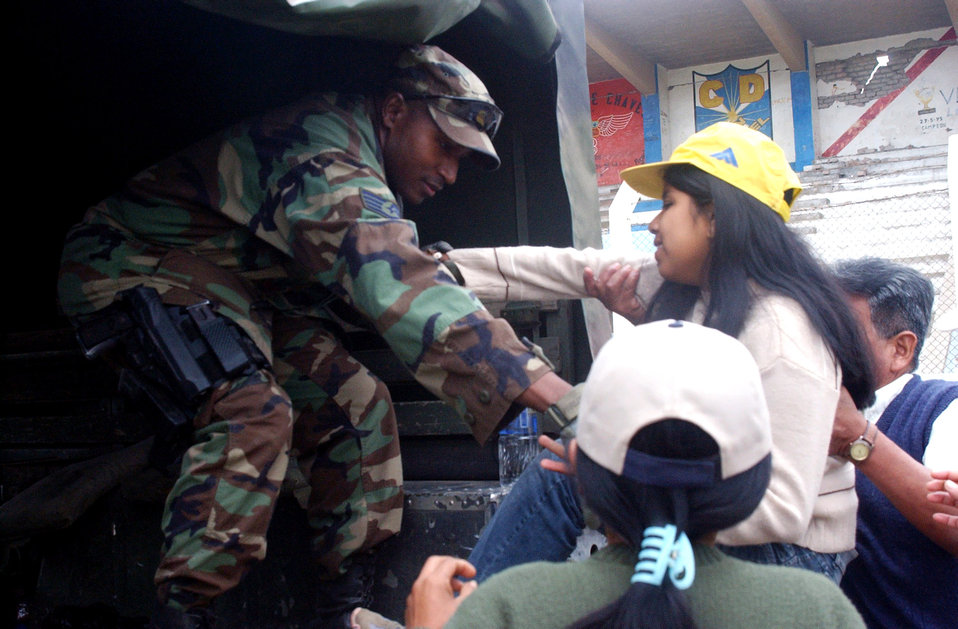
Relief in Peru

Staff Sgt. Glenn Gordon helps a Peruvian girl into the back of a Humvee for transport to the airport Aug. 21 in Pisco, Peru. An 8.0 magnitude earthquake struck the region Aug. 15. The medical team provided basic medical care to many of the citizens of Pisco at their field site. In the event a more serious diagnosis, the team was able to provide transportation for patients to facilities at the airport. Sergeant Gordon is a Joint Task Force Bravo joint security forces member.